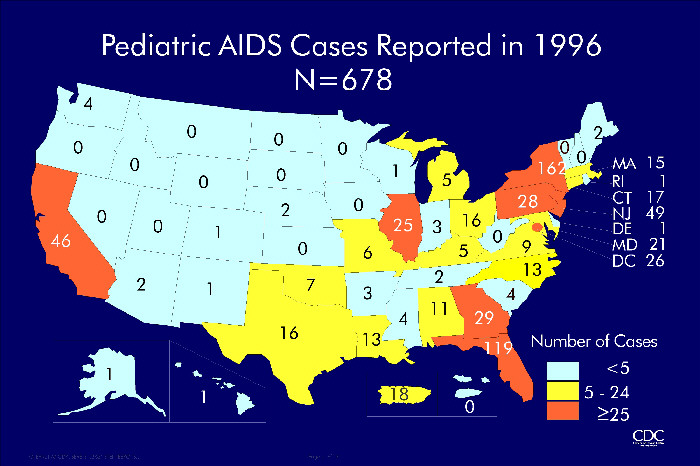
Pediatric AIDS Cases Reported in 1996